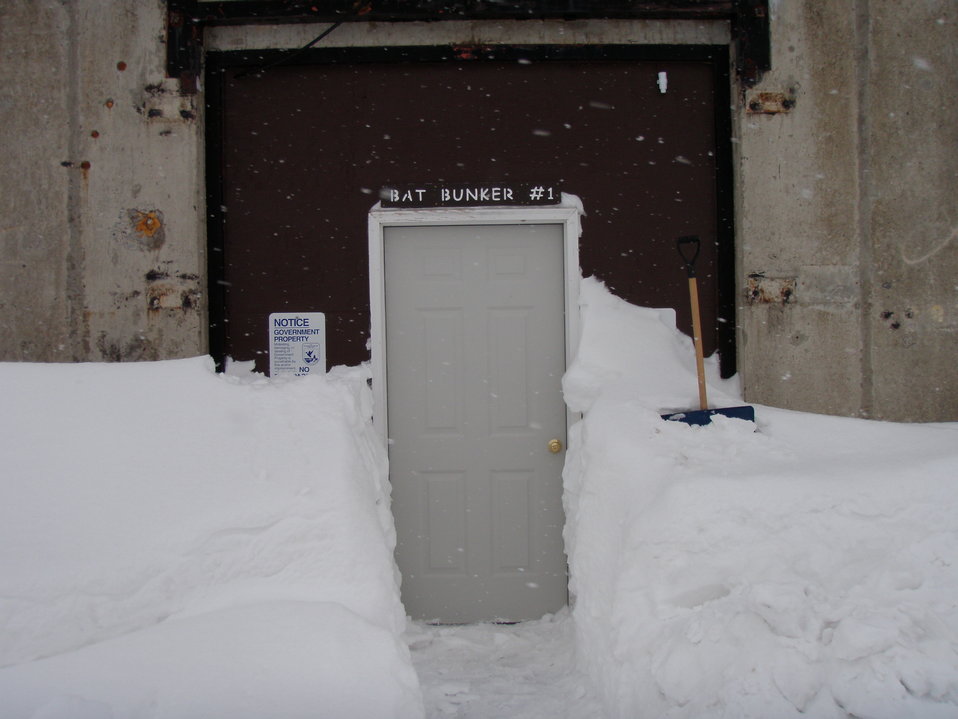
Entrance to bunker in late March